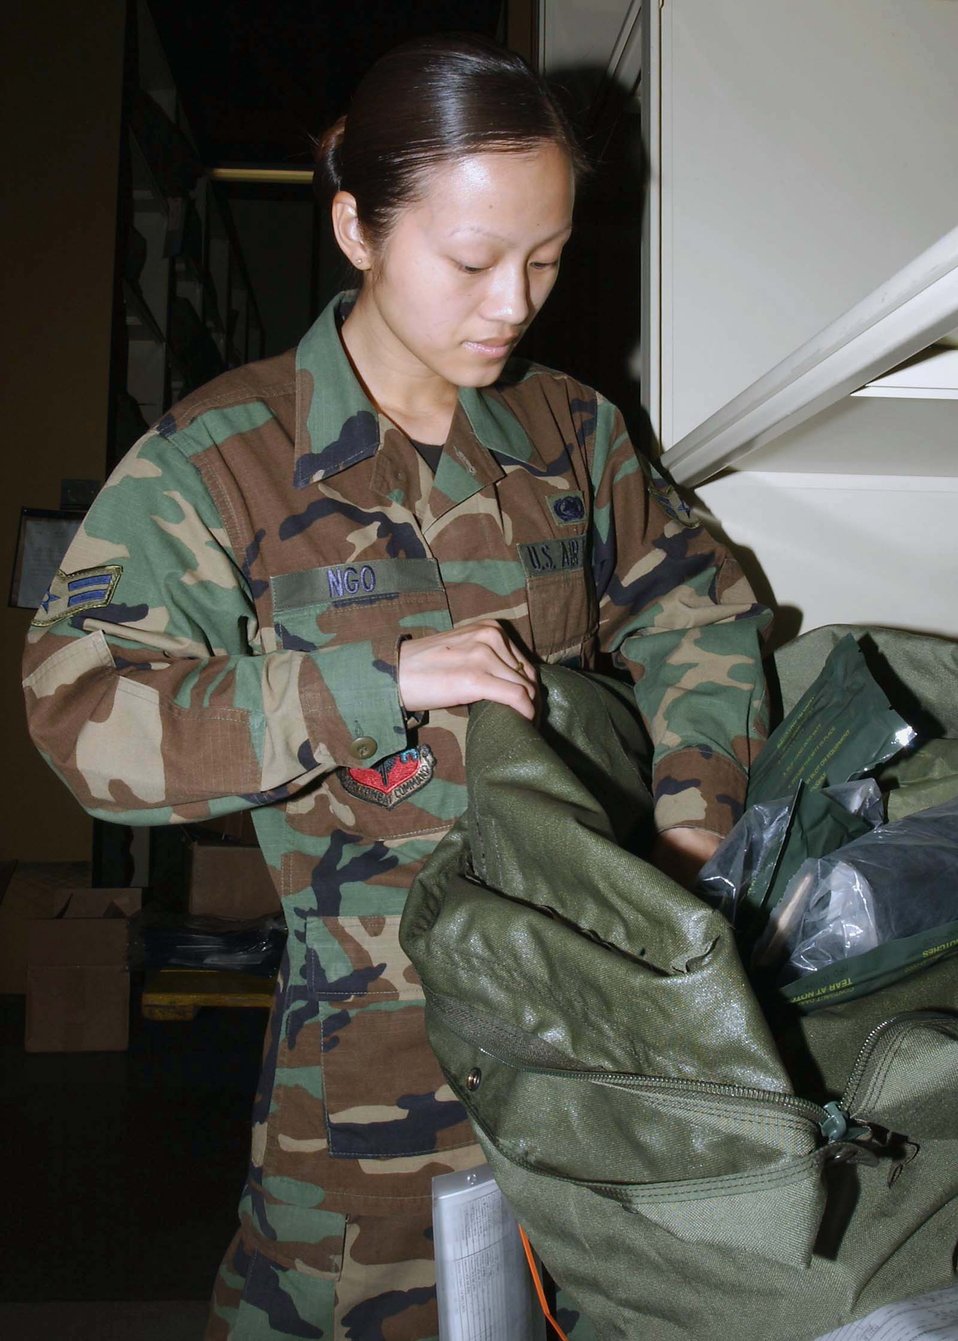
Airman inspired by father's service

WHITEMAN AIR FORCE BASE, Mo. -- Airman 1st Class Duong Ngo checks a mobility bag here. Airman Ngo, whose father served during the Vietnam War, migrated from communist Vietnam to the U.S. in 1993. She is assigned to the 509th Logistics Readiness Squadron.